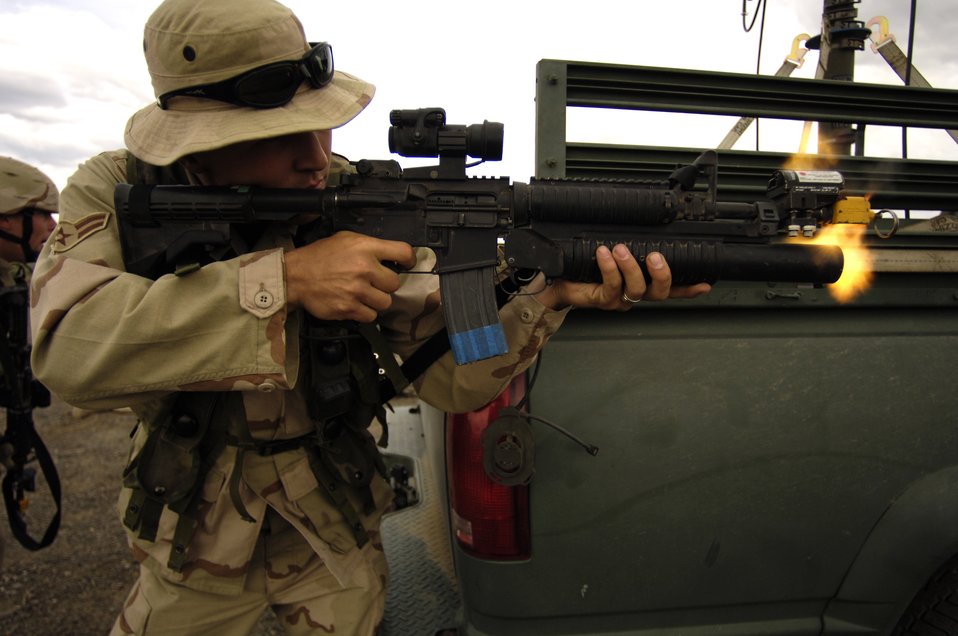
Lightning Fury

Airman 1st Class Jason Lompre returns fire during a simulated fight with opposing forces during Lightning Fury, an airfield seizure exercise at Amedee Field in Herlong, Calif., on Saturday, May 20, 2006. Airman Lompre is with the 615th Contingency Response Wing at Travis Air Force Base, Calif.